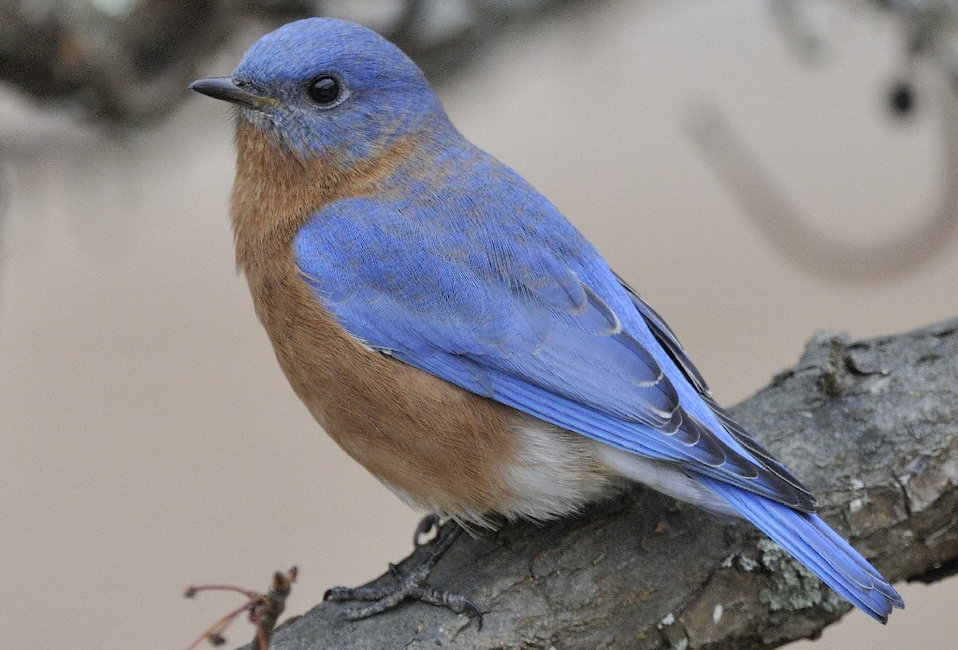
Photo of the Week - Eastern Bluebird (MA)

Photo of the Week - 1/30/12

Eastern bluebird photographed in Hadley, MA.